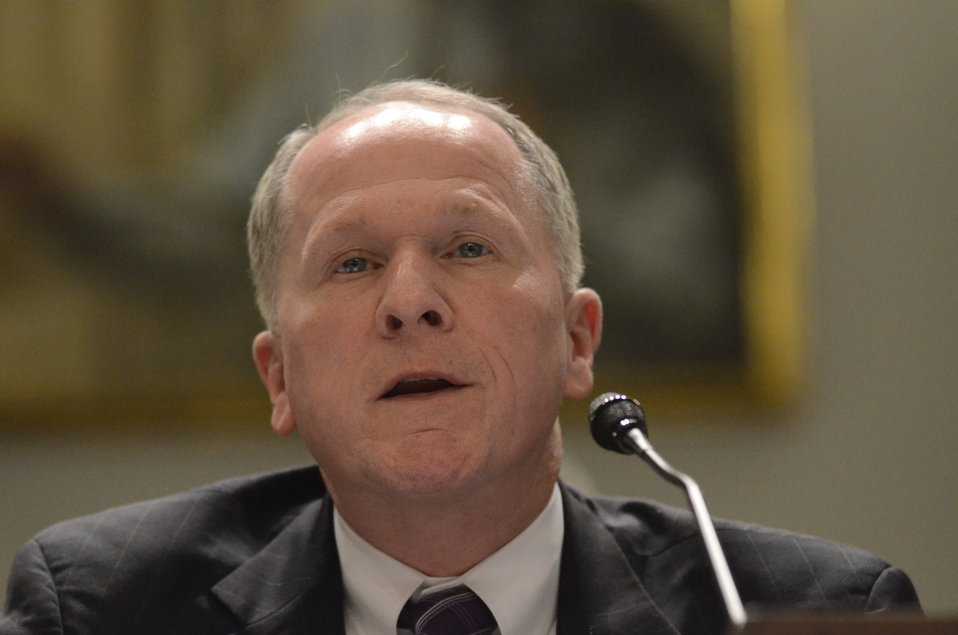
U.S. Department of Agriculture Animal Plant and Health Inspection Service (APHIS) Associate Administrator Dr. Kevin Shea speaking on Retailers & Entertainers Lacey Implementation & Enforcement Fairness Act & Freedom from Over-Criminalization & Unjust Seizures Act, at the Longworth House Office Building, in Washington, D.C., on Tuesday, May 8, 2012.